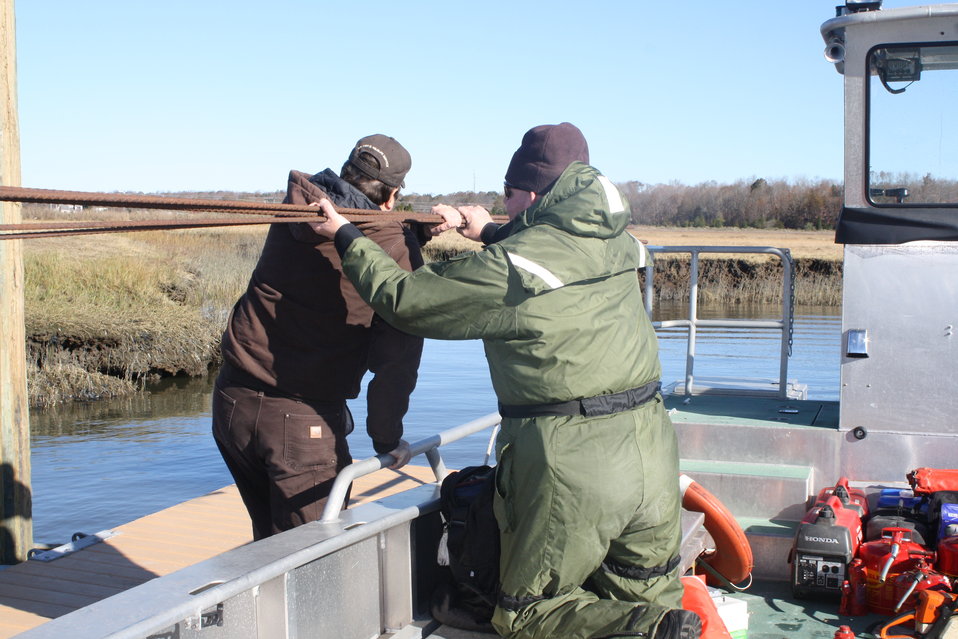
Stewart B. McKinney National Wildlife Refuge (CT)

Refuge Manager Rick Potvin and Refuge Law Enforcement Office Sean Healy load a boat with materials to begin repairs at the refuge's Outer Island Unit after Hurricane Sandy.